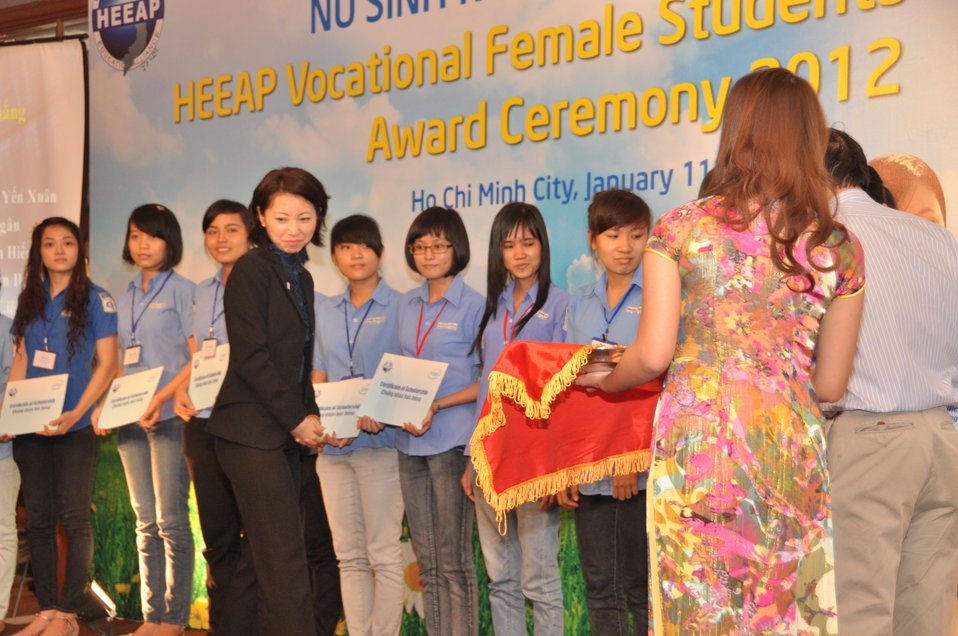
Female Vocational Student Scholarship Ceremony

January 11, 2013, Ho Chi Minh City